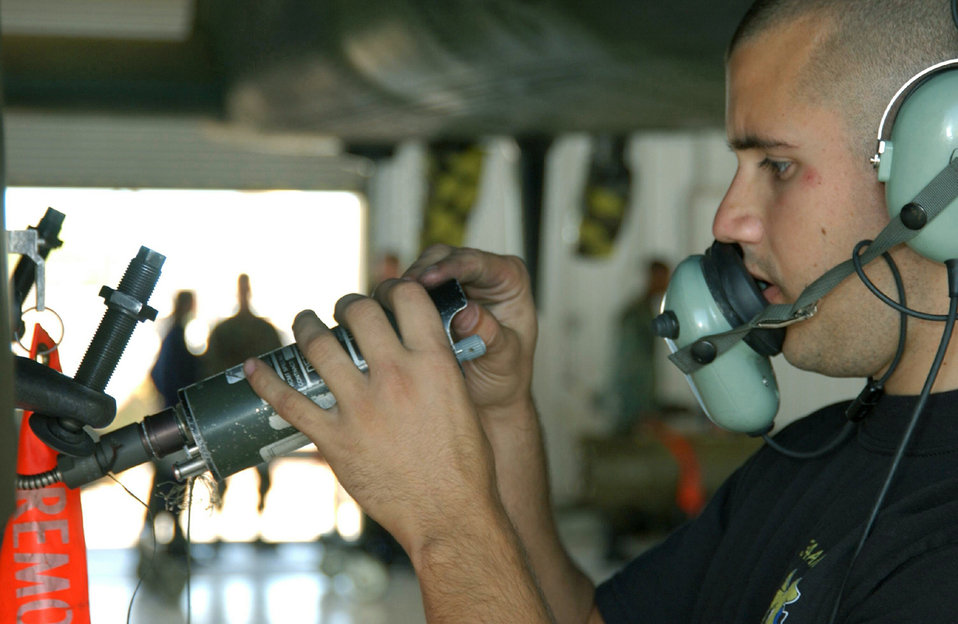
Load lovers

DAVIS-MONTHAN AIR FORCE BASE, Ariz. -- Airman 1st Class Jesse Tyson checks the voltage on an armament circuit during a weapons load crew competition here. Airman Tyson is assigned to the 355th Aircraft Maintenance Squadron here.